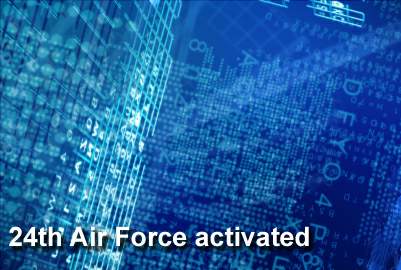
24th Air Force activated, 2 units realign in joint ceremony

Air Force officials activated the newest numbered Air Force and realigned two units under its command in a joint ceremony Aug. 18 at Lackland Air Force Base, Texas.